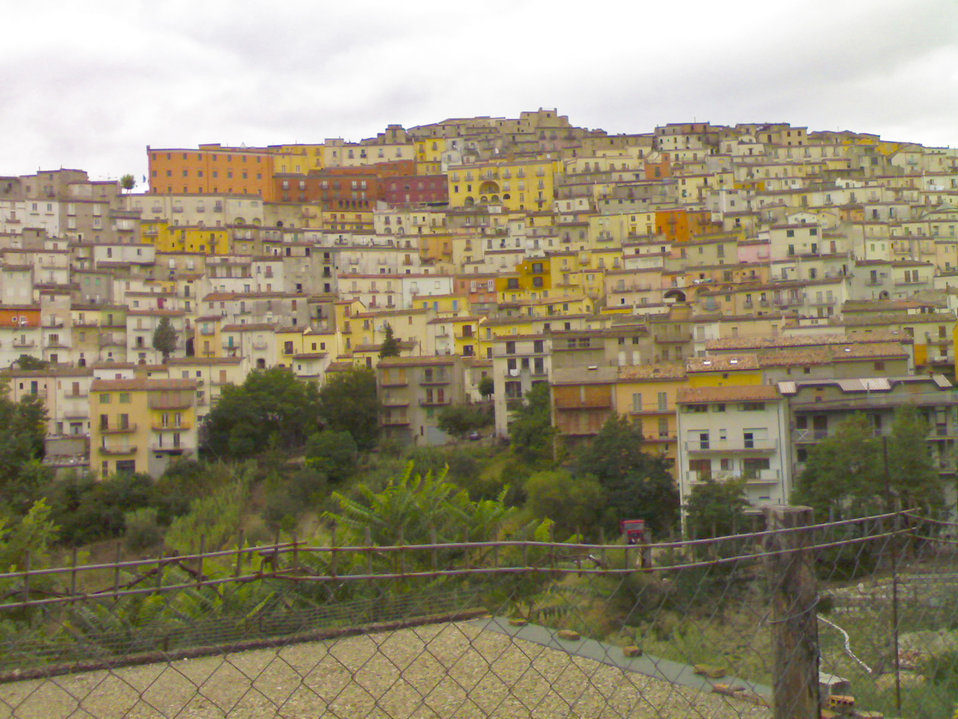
Italiano: Cittadina di Calitri, provincia di Avelino, Italia. Calitri town, in province of Avellino, Italy.